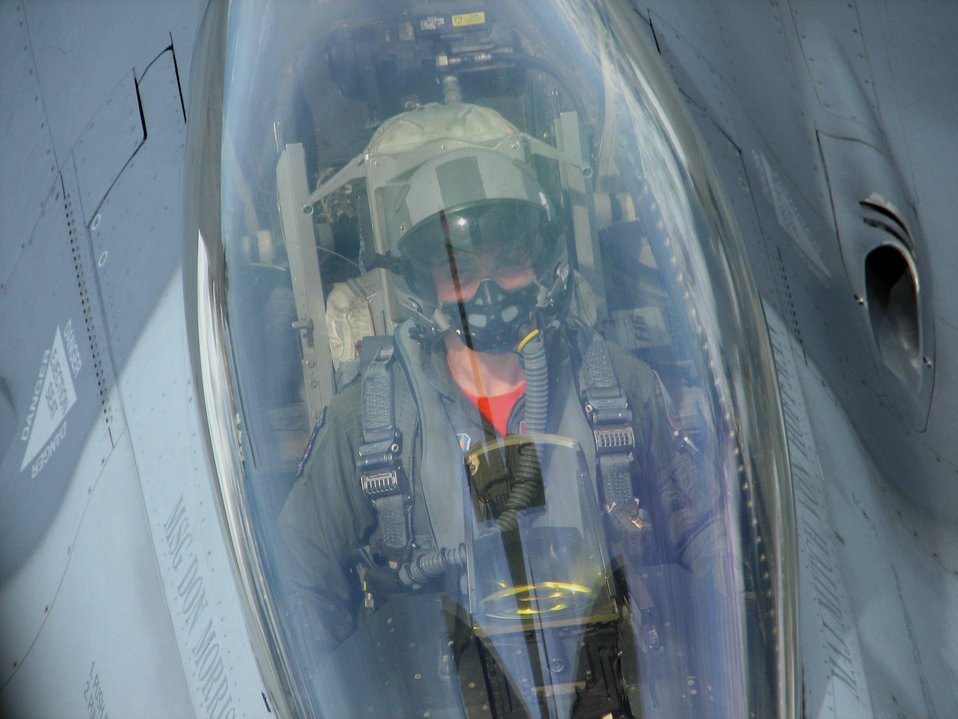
Military appreciation

OVER ALABAMA -- Capt. Mike McGinn looks up from his F-16 Fighting Falcon while refueling. He performed a fly-over Sept. 24 for a college football game at Auburn, Ala., in support of military appreciation day and the 58th Anniversary of the U.S. Air Force. Captain McGinn is from the Alabama Air National Guard's 187th Fighter Wing in Montgomery.